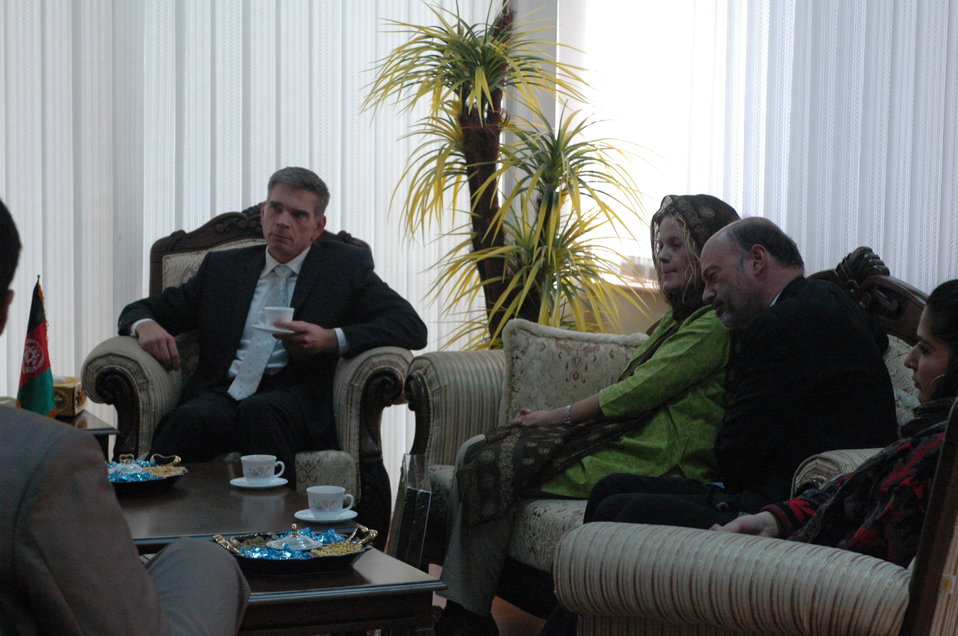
Community Based Stabilization Grants Ceremony, December 7, 2010